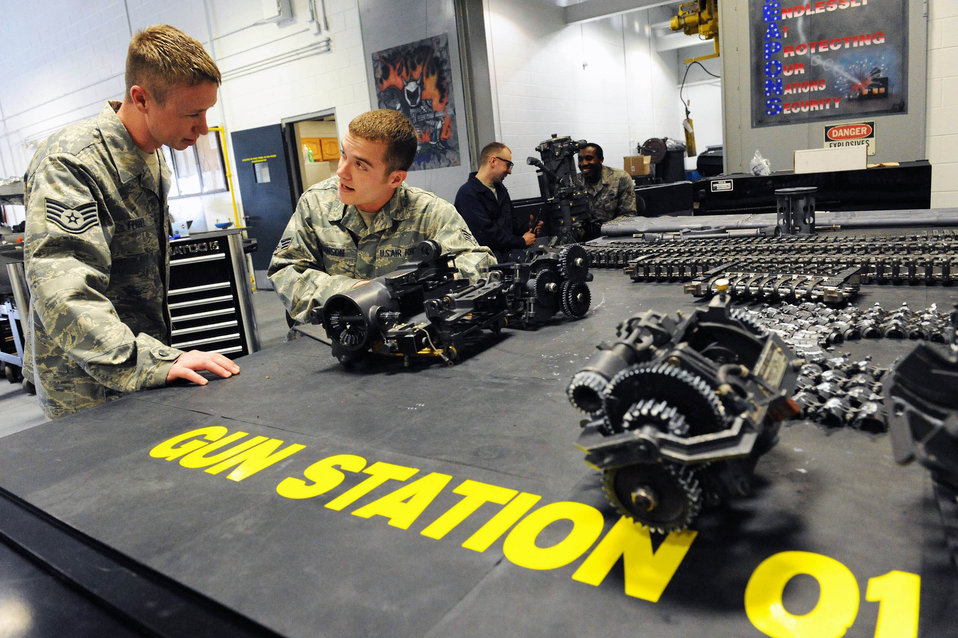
Armament improves operations with AFSO 21

Staff Sgt. Brandon Ferrel and Senior Airman Zach Johnson rebuild the M61A1 20mm gatling gun on new gun station table created with a rapid improvement event conducted by the 20th Equipment Maintenance Squadron as Shaw Air Force Base, S.C., March 12. The RIE is part of Air Force Smart Operations for the 21st Century being implemented on Shaw AFB. Sergeant Ferrel and Airman Johnson are 20th Equipment Maintenance Squadron armament system specialists.